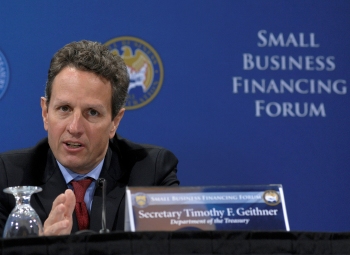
Treasury and SBA Host a Small Business Financing Forum

Secretary Geithner addressed the forum at the closing session to discuss ideas shared and next steps.